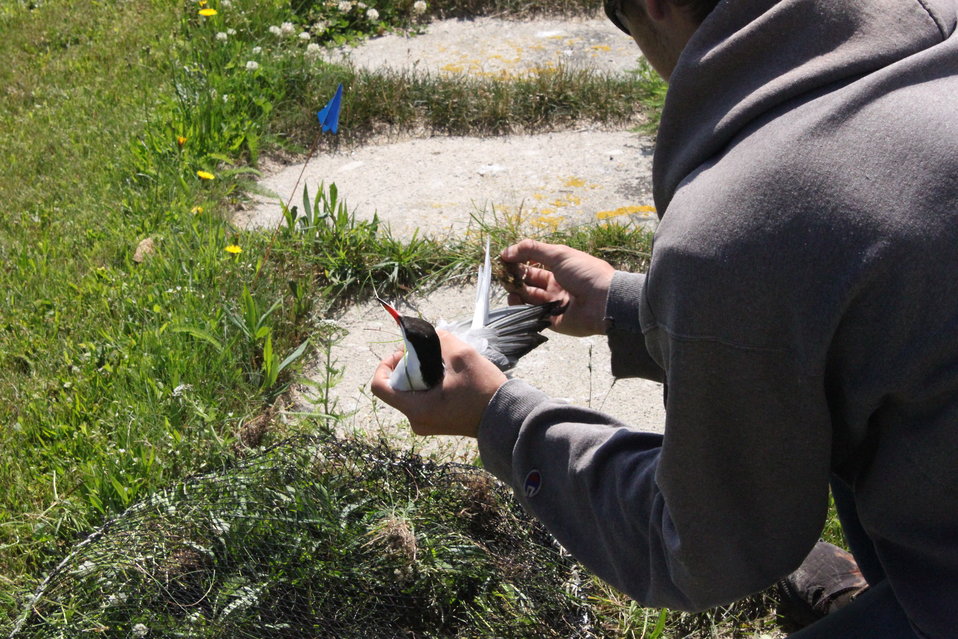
Captured Tern For Testing